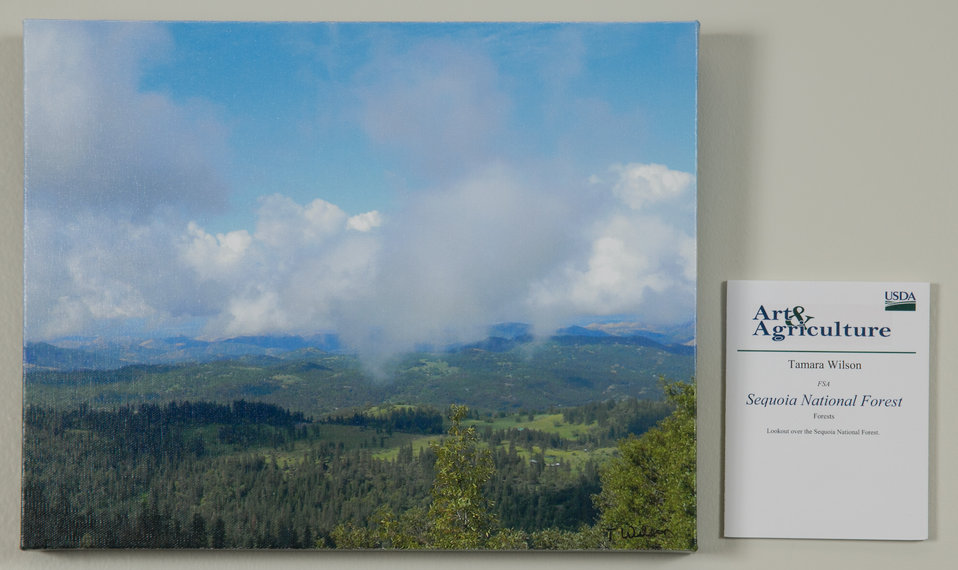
Online Viewer's Choice entries of the 2013 Art & Agriculture, Tuesday, July 9, 2013, in the South Building, Washington, D.C. Themes were expressed by employees from across the department and the contest was open to full-time and part-time USDA employees. Winning artwork will be displayed till the end of the year. U.S. Artistic expression is a creative outlet that is vital for an individual to grow and develop.